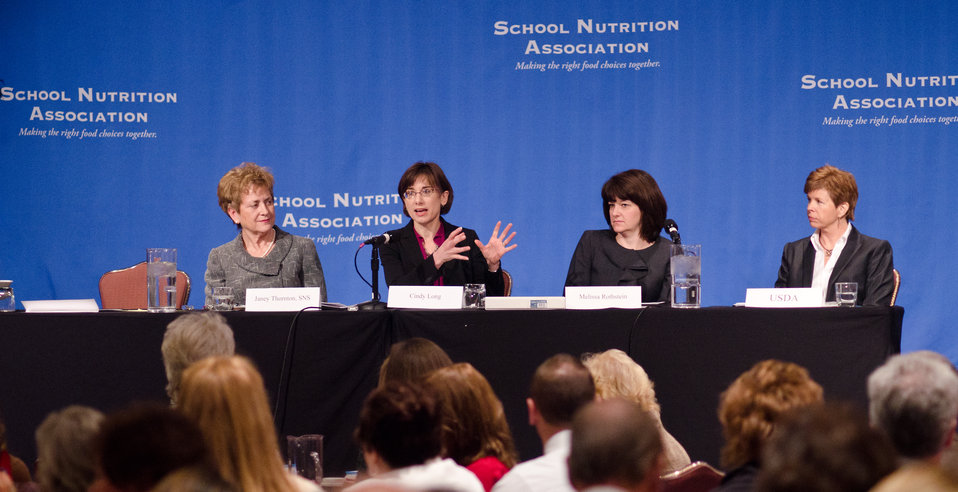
U.S. Department of Agriculture Food and Nutrition Service Child Nutrition Director Cindy Long (second from left) responded to questions during the School Nutrition Association’s closing general session of their 39th annual Legislative Action Conference at the J.W. Marriott Hotel in Washington, D.C., on Wednesday, March 9, 2011. With her at the table are Agriculture Deputy Under Secretary for Food, Nutrition and Consumer Services Dr. Janey Thornton (left); Chief, Policy and Program Development Branch, Child Nutrition Division, Food and Nutrition Service Melissa Rothstein (second from right); and Food Distribution Division Director Cathie McCullough (right).